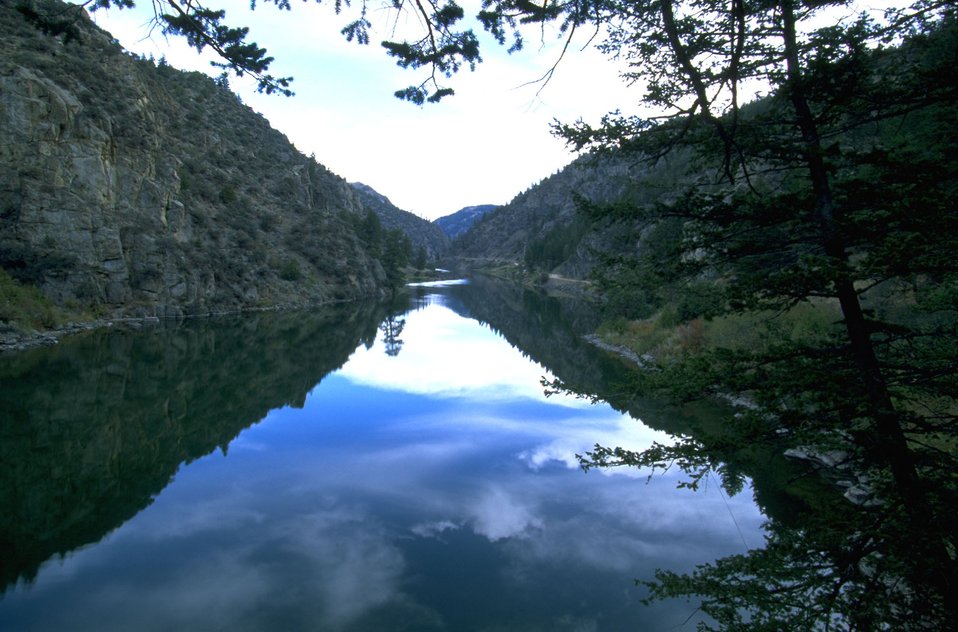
Reflection of clouds and hills on calm water